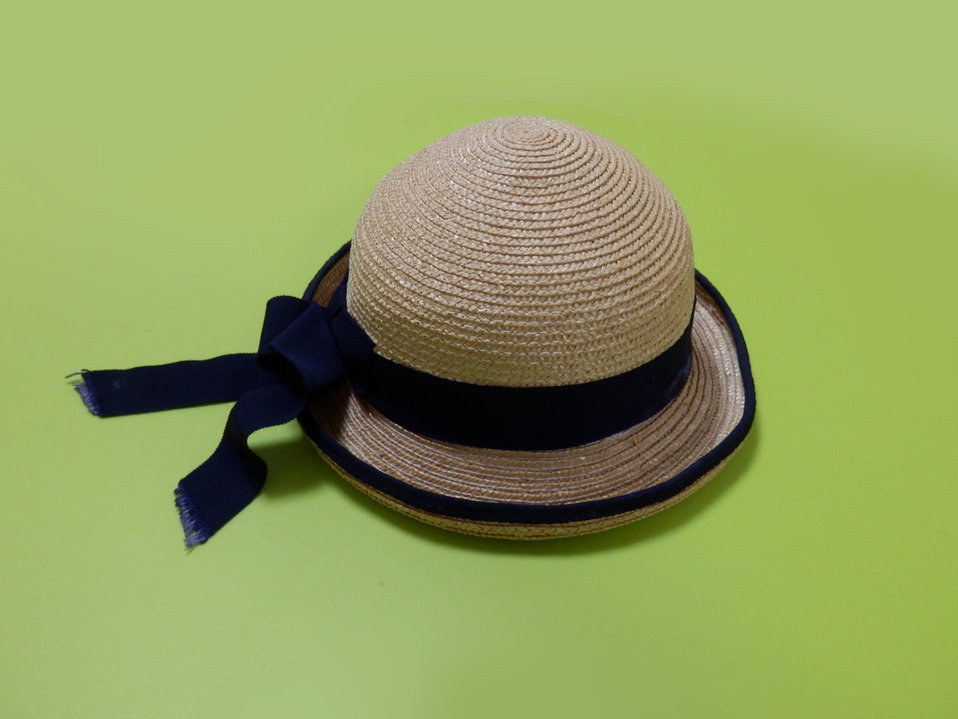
The hat

A straw hat..